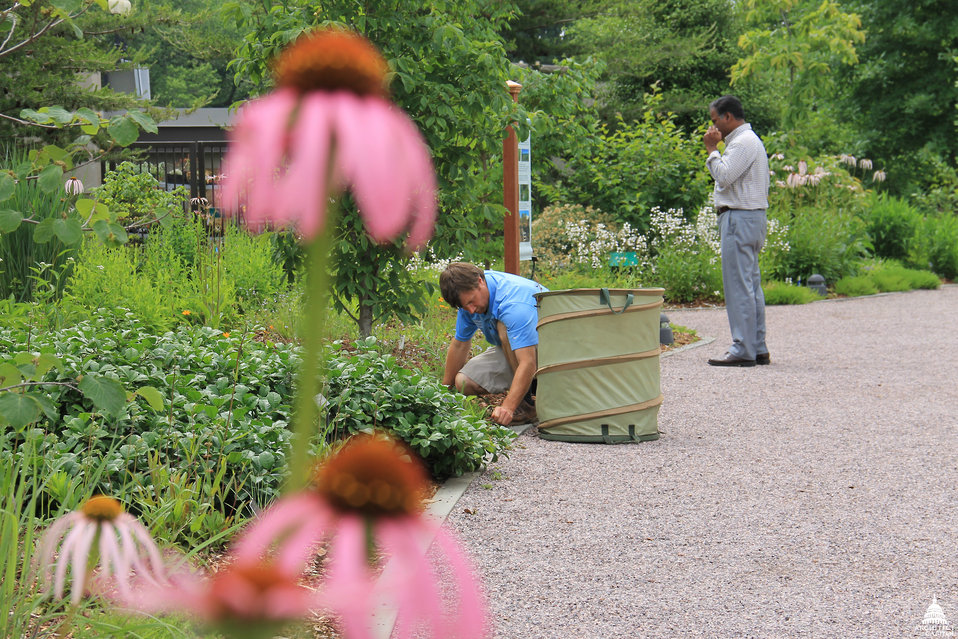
AOC Gardener at Work

An AOC gardener tends to the National Garden at the U.S. Botanic Garden.